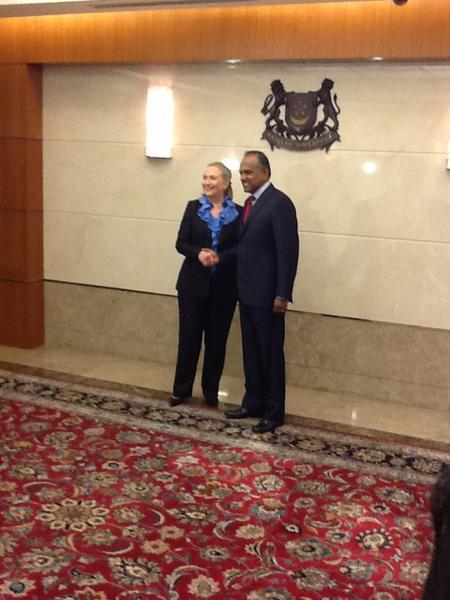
Secretary Clinton Meets With Singaporean Foreign Minister Shanmugan

U.S. Secretary of State Hillary Rodham Clinton meets with Singaporean Foreign Minister Shanmugan in Singapore, November 17, 2012.